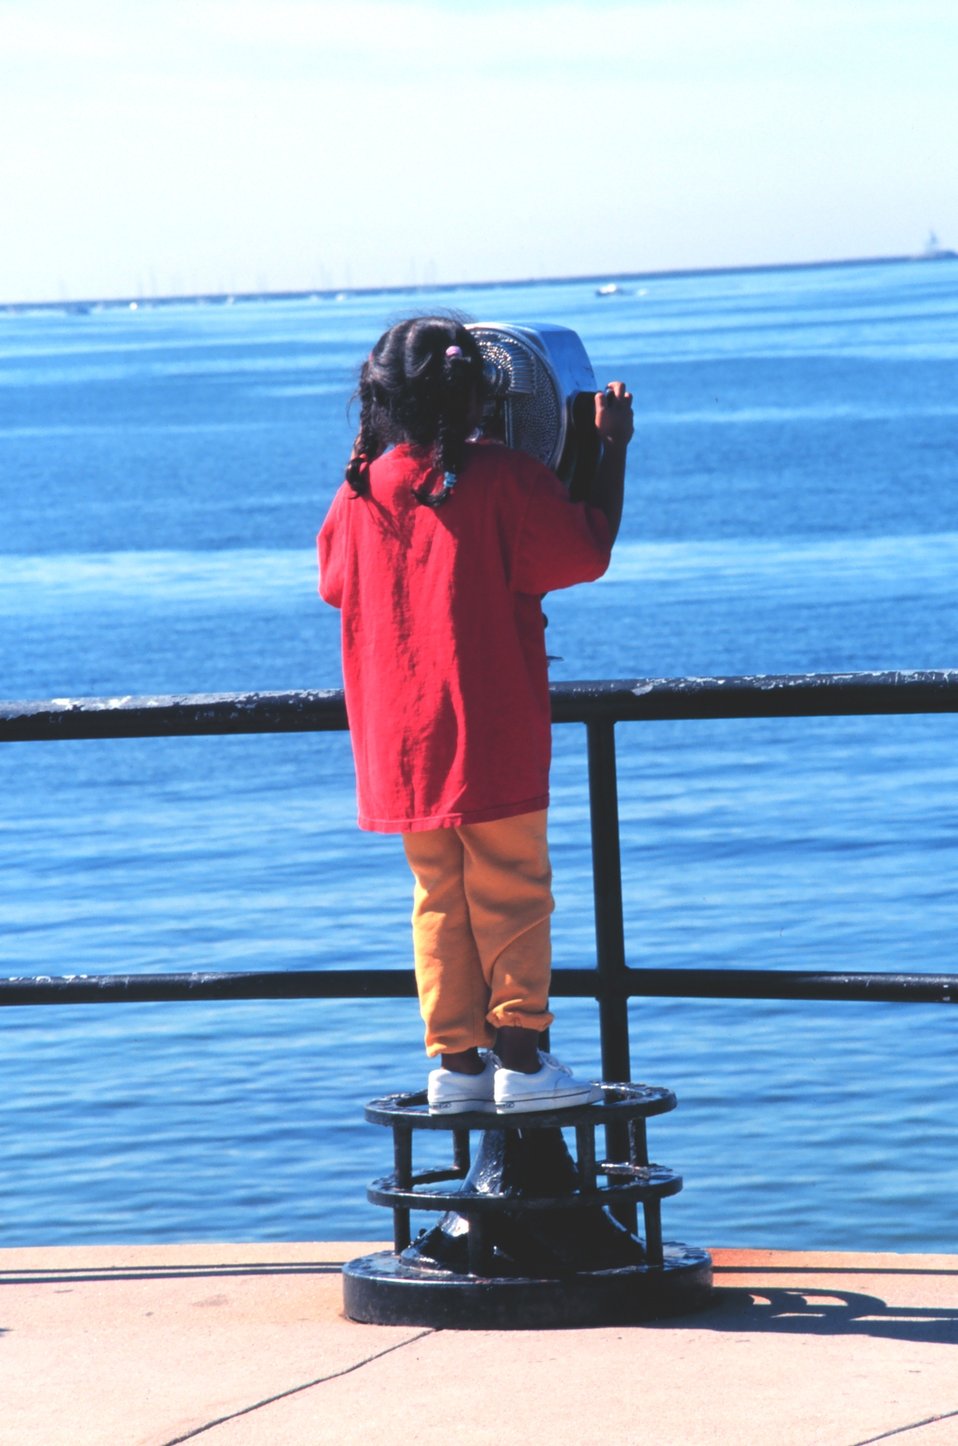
Checking out the view at Gloucester.